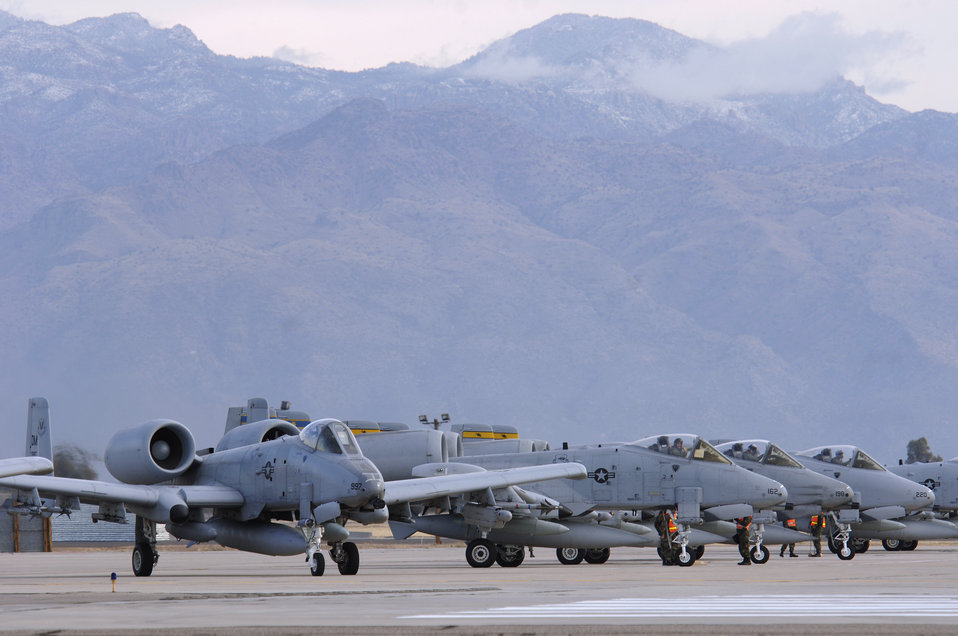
Bushwhacker tests wing

A-10 Thunderbolt IIs from the 354th Fighter Squadron sit on the end of the runway as they are armed by crew chiefs from the 355th Maintenance Squadron as they prepare to take off to a simulated location as part of Exercise Bushwacker 07-02 Jan. 21 from Davis-Monthan Air Force Base, Ariz. Bushwacker 07-02 is an operational readiness exercise designed to prepare the 355th Wing for deployment.